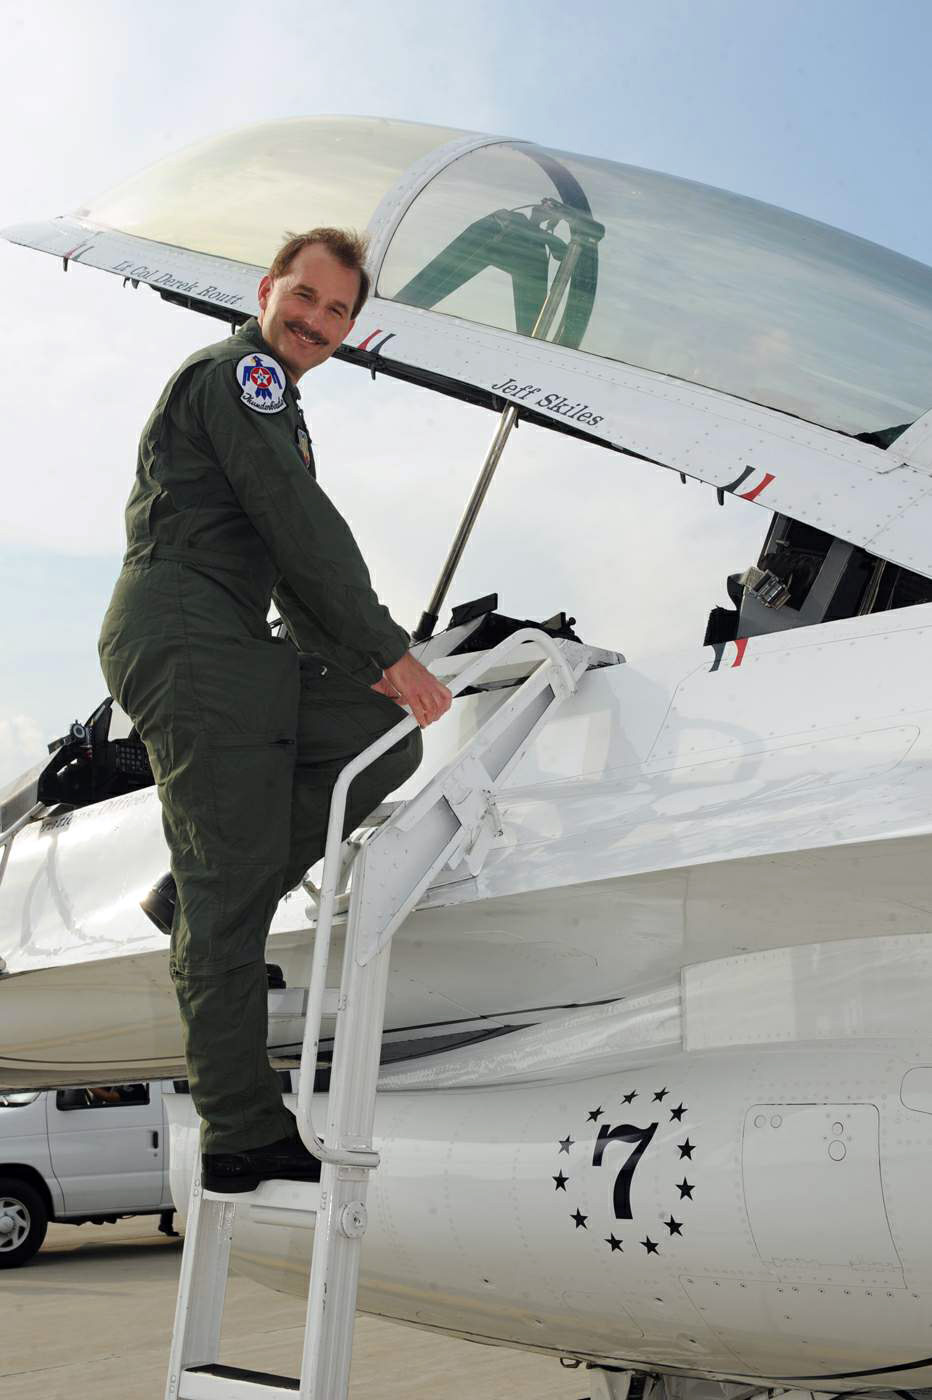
Hometown Hero Program

Jeff Skile, co-pilot of U.S. Airways Flight 1549 that crashed into the Hudson River in New York in January, climbs into a Thunderbird F-16 Fighting Falcon before his flight with the U.S. Air Force Air Demonstration Squadron July 23.